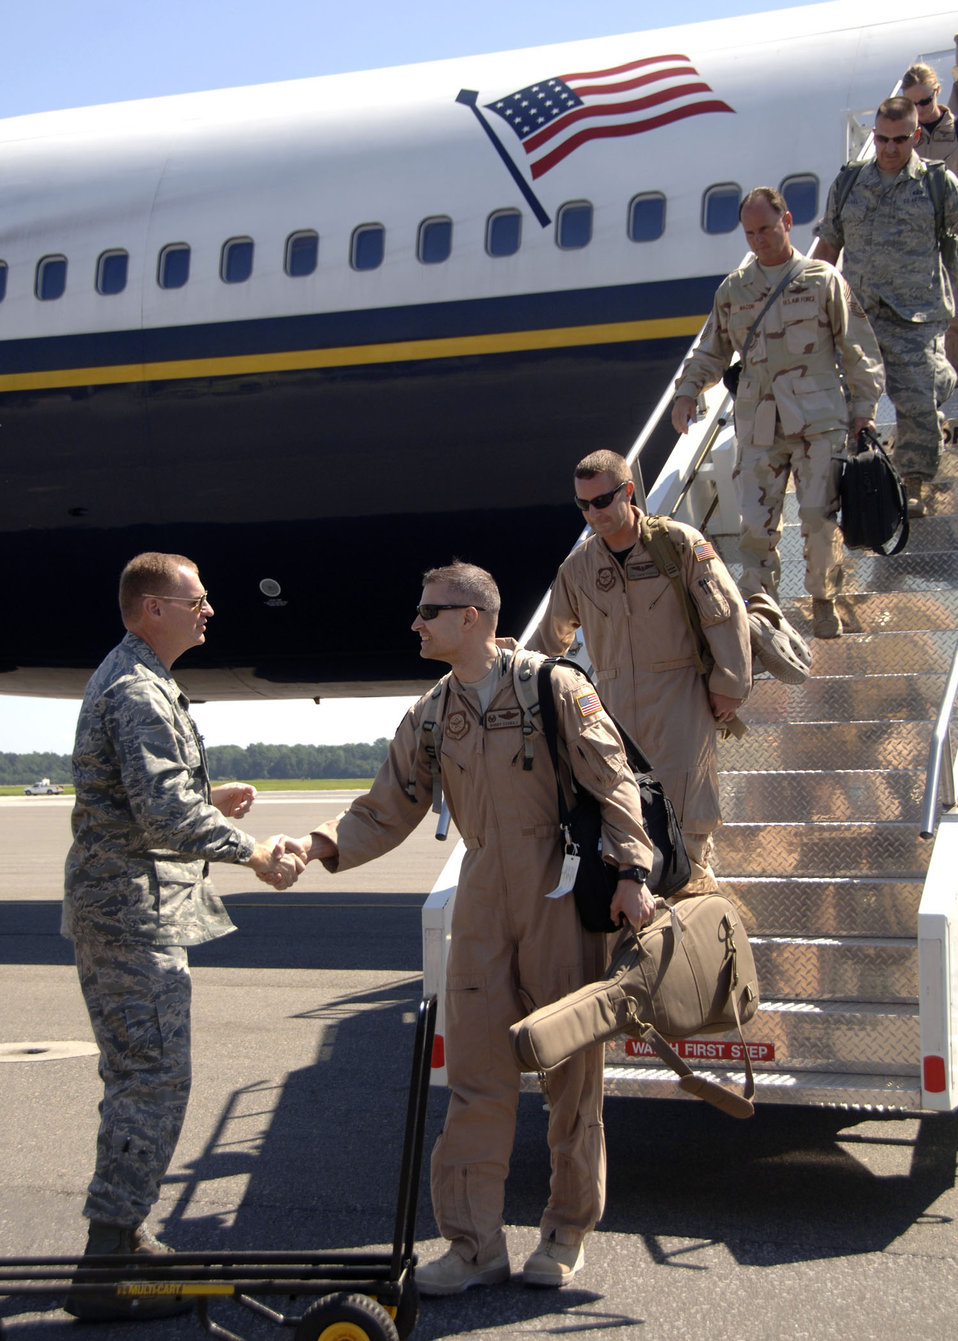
Charleston Airmen welcome home warriors

Col. John Millander greets Lt. Col. Norman Czubaj as the 14th Airlift Squadron makes their way off the plane Sept. 3 after arriving to Charleston Air Force Base, S.C. The 14th AS Airmen returned after a four-month deployment to Southwest Asia. Colonel Millander is the 437th Airlift Wing commander and Colonel Czubaj is the 14th AS commander.